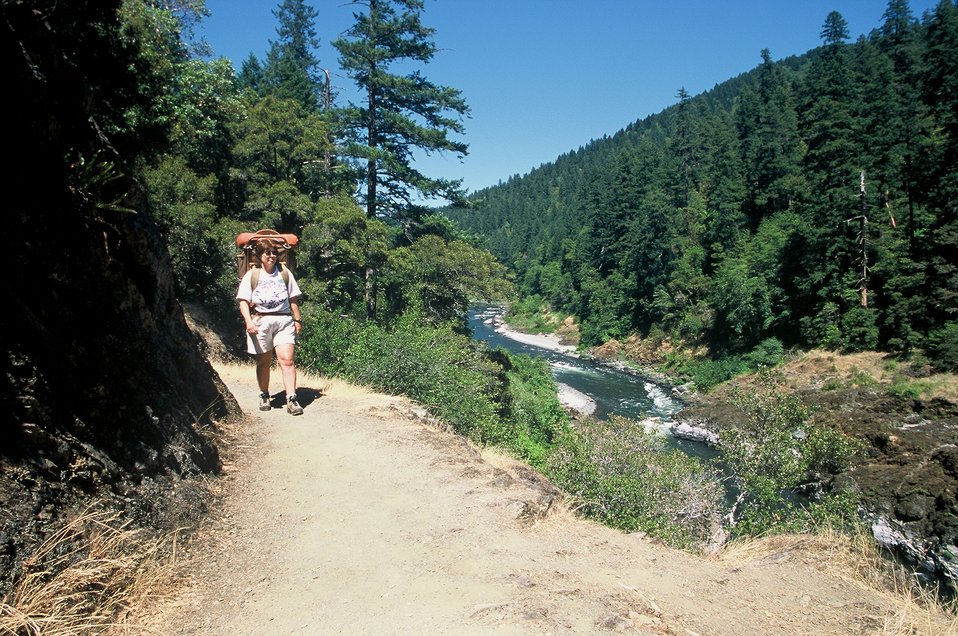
Hikers on trail between Mule Creek and Blossom. Looking up river.